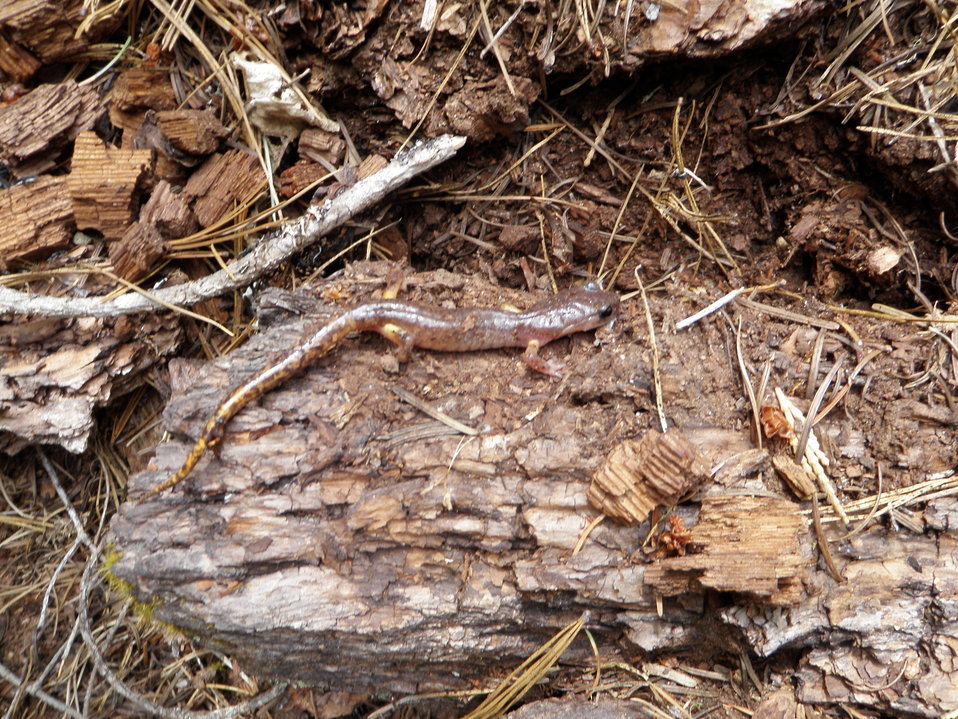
Salamanders

The Ensatina salamander (Ensatina eschscholtzii) is a good indicator of forest ecosystem health.